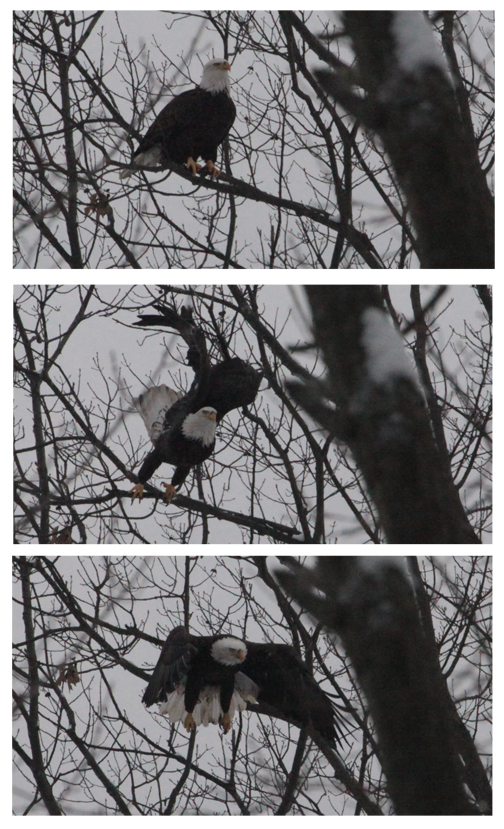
Bald eagle takes flight outside the Northeast Regional Office in Hadley, MA.